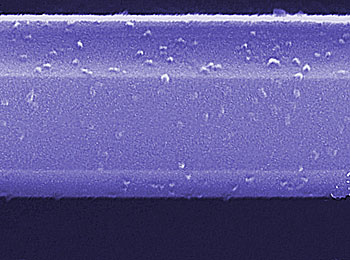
Nanowire; Sensor

Scanning electron microscope image of a gas sensor segment fabricated of a semiconducting nanowire of gallium nitride. The nanowire of less than 500 nanometers across is coated with nanoclusters of titanium dioxide, which alters the current in the nanowire in the presence of a volatile organic compound and ultraviolet light.